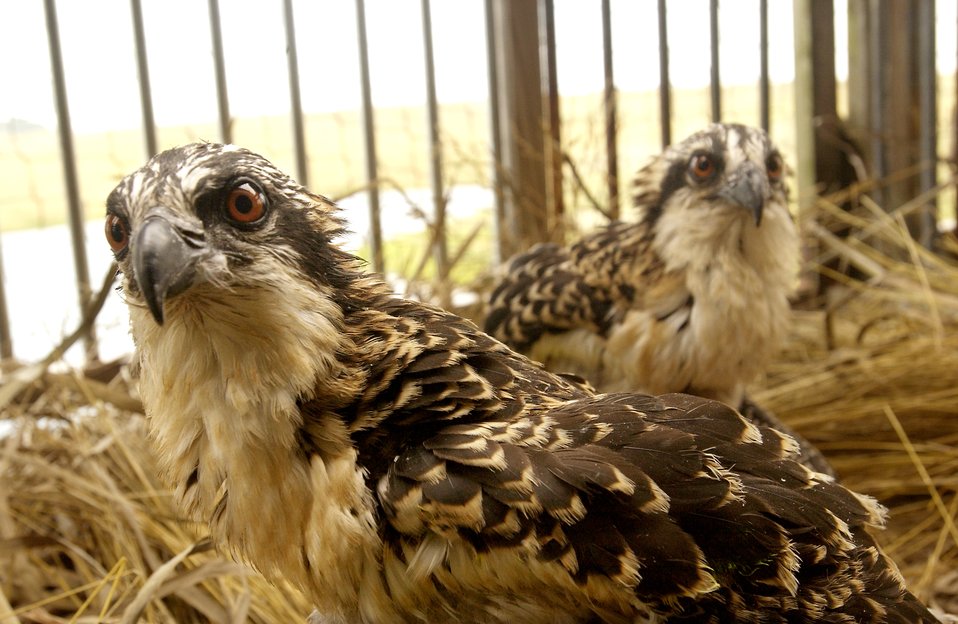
Ospreys, Eagles share airspace at Langley

CUMBERLAND, Ohio -- Two recently relocated osprey from Langley Air Force Base, Va., become acclimated to their new home at a conservation facility here. The 10,000-acre facility is the largest such facility in North America and is home to 200 animals and 24 different species. Eleven osprey were relocated from Langley to a conservation facility in Cumberland, Ohio, to control the population and minimize the risk of potential bird strikes.